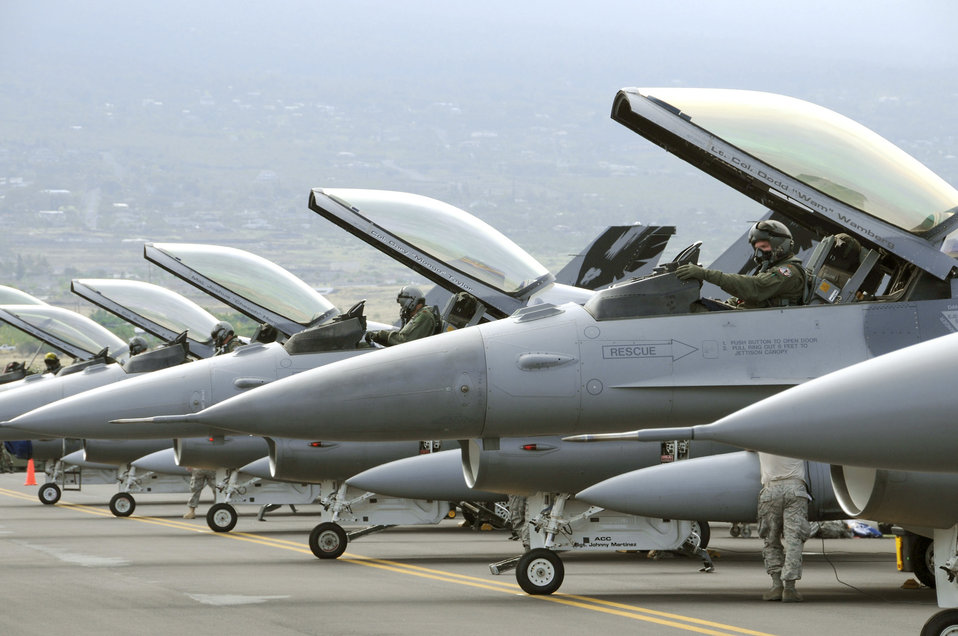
Pretty maids in a row

F-16 Fighting Falcons prepare to launch in support of a Rim of the Pacific exercise July 13, 2010 at the Kona International Airport in Hawaii. RIMPAC is a biennial exercise that promotes interoperability involving people and assets from 14 different nations. The aircraft are from the 144th Fighter Wing out of Fresno, Calif.